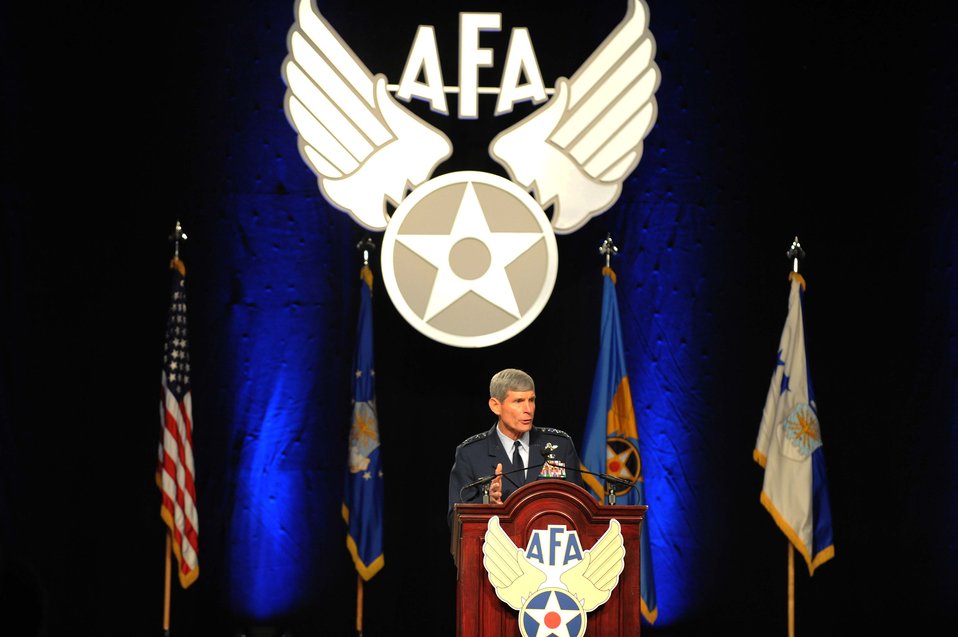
Air Force will preserve ‘core contributions’ despite pressures, CSAF says

Air Force Chief of Staff Gen. Norton Schwartz speaks to attendees Sept. 20, 2011, at the Air Force Association's 2011 Air & Space Conference and Technology Exposition at National Harbor, Md. Schwartz said Air Force leaders are focused on managing potential budget constraints so the service can continue to provide its unique contributions to national security.